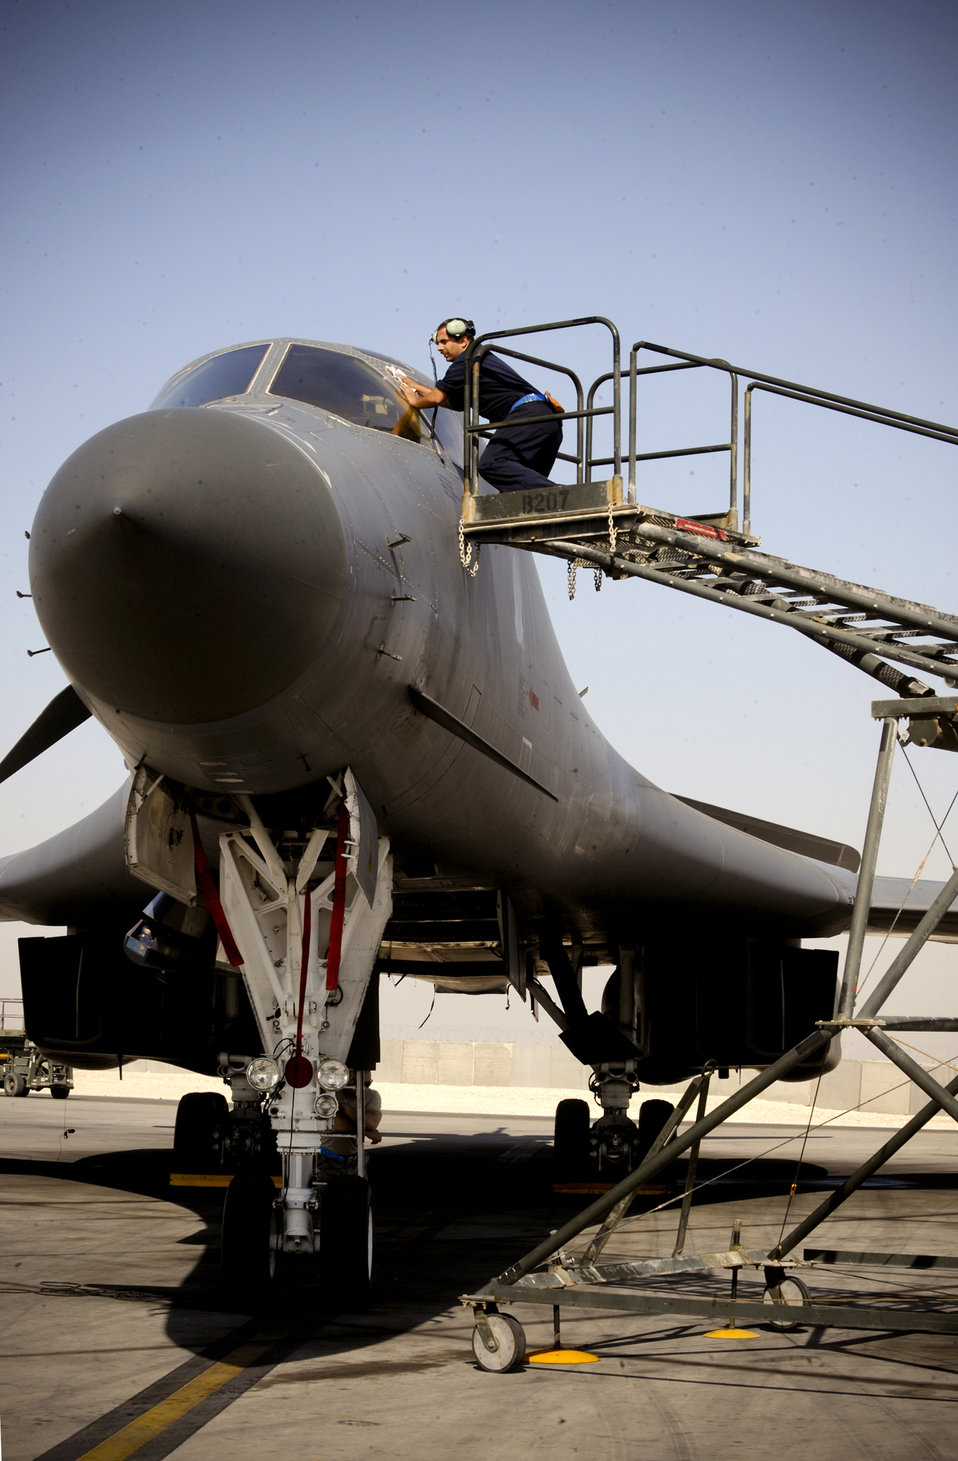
Airmen keep B-1B ready for bombs on target

Staff Sgt. Trevor Helm washes the windshield of a B-1B Lancer prior to a mission Jan. 29 at an air base in Southwest Asia. The windows require a special solvent to clean them due to the material used in its creation. Sergeant Helm is a crew chief for the 7th Aircraft Maintenance Unit deployed from Dyess Air Force Base, Texas. He is a native of Lisbon, Maine.